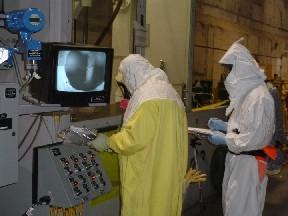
Hanford waste treatment

After extensive training and a successful Operational Readiness Review (ORR), workers at the T Plant treat radioactive sludge retrieved from the North Loadout Pit of the K Basins at the Hanford Site near Richland, WA.